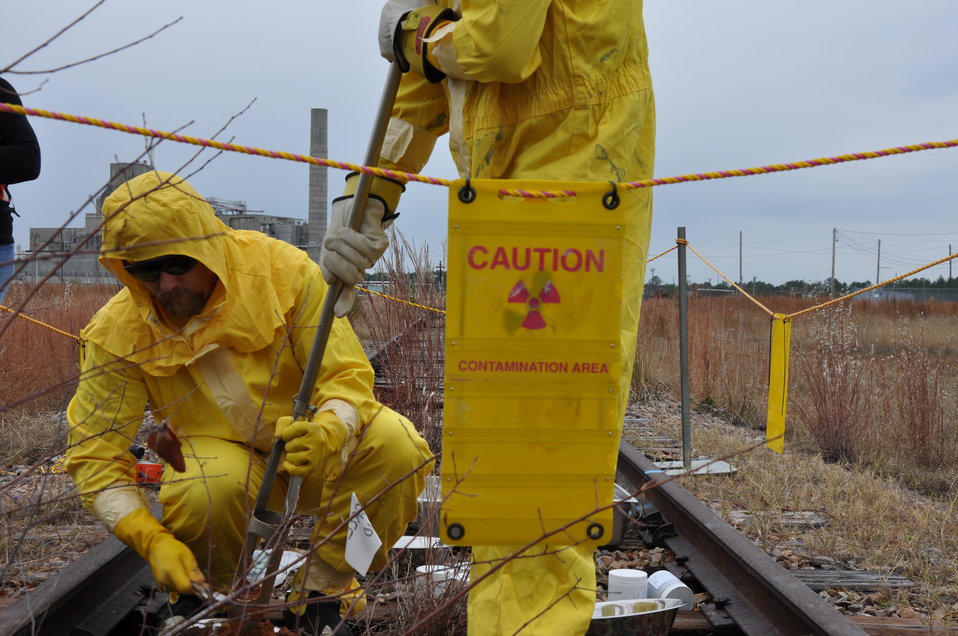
Workers Clean Up C Area as Added Value from Recovery Act P and R Reactor Projects

Workers take samples as part of characterization and remediation work at the C Area Reactor Cask Car Railroad Tracks.